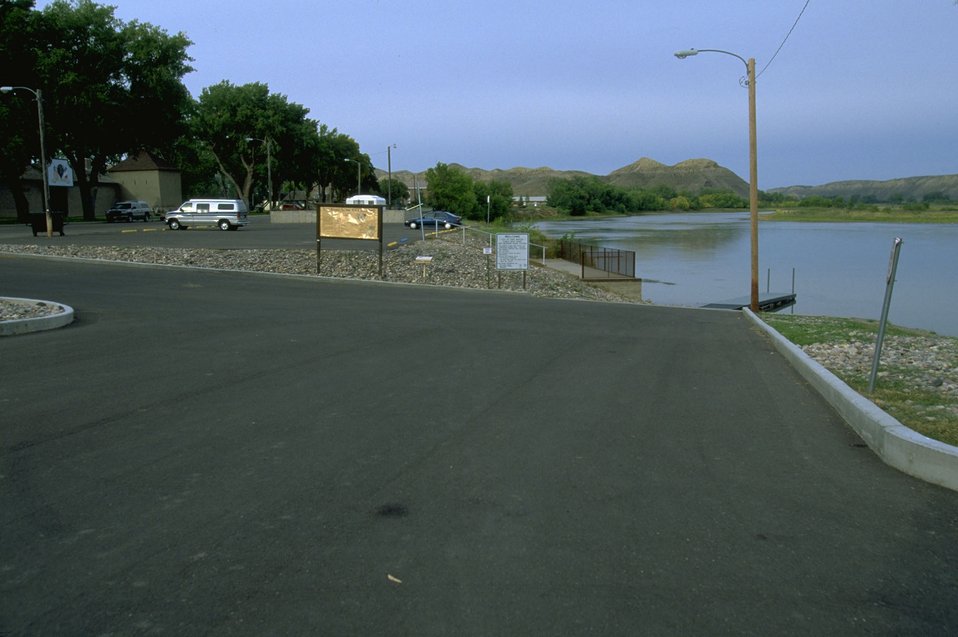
City boat launch/ramp at Fort Benton